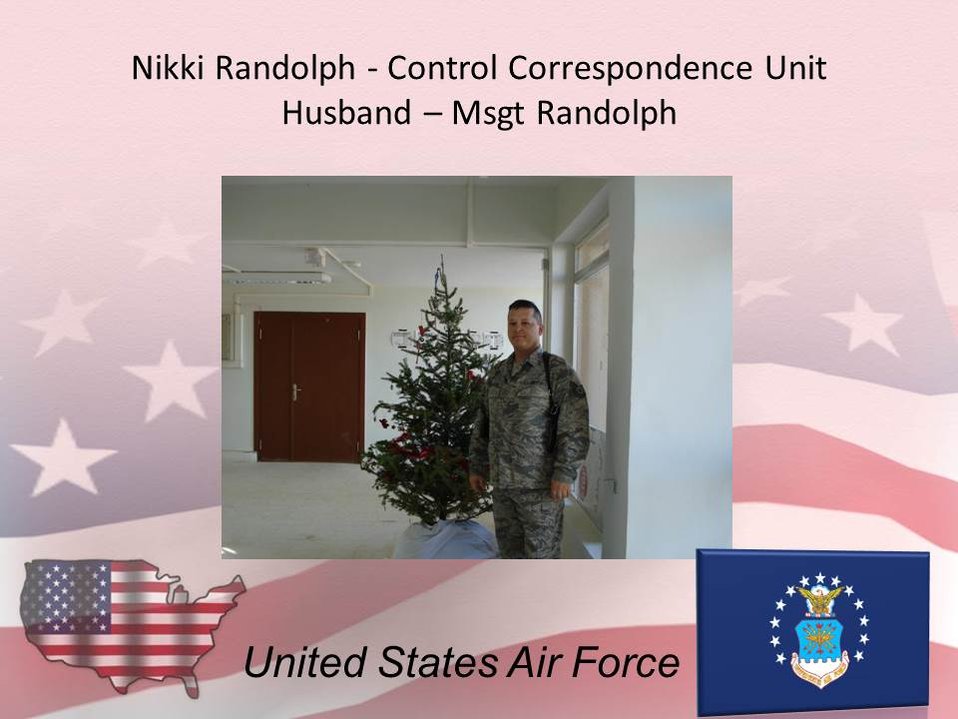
Nikki Randolph